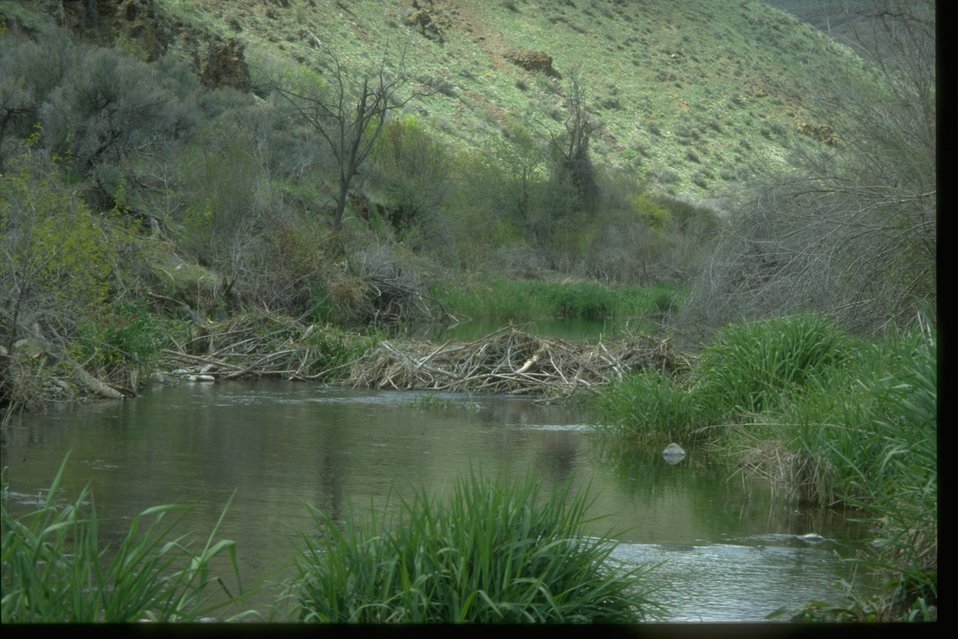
Beaver dam Douglas Creek in Douglas County, WA.